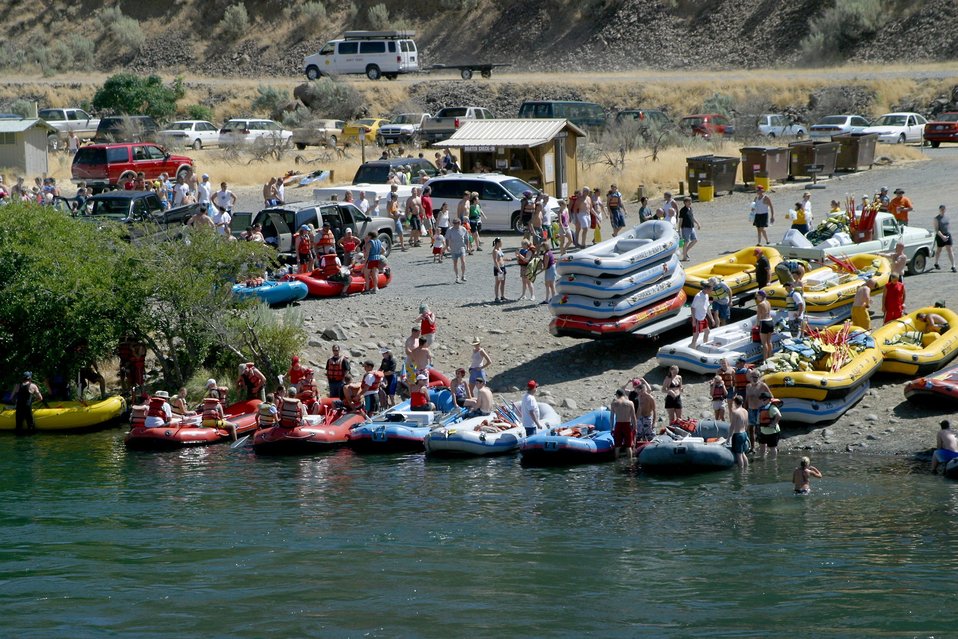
Over 200,000 people a year float the Lower Deshutes River.